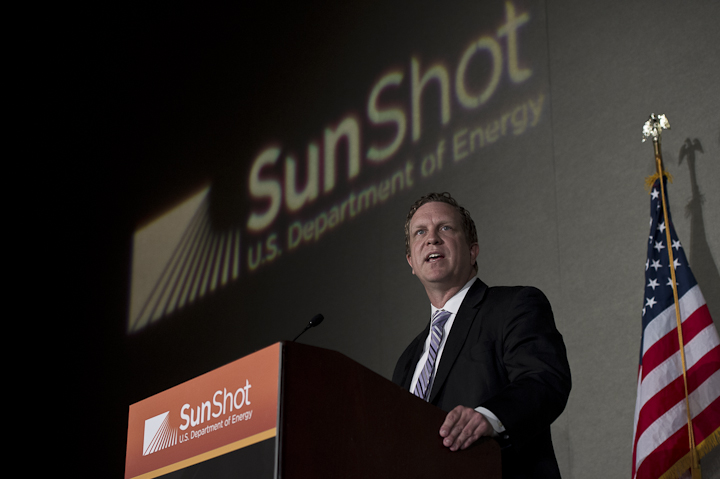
SunShot David Danielson

June 14, 2012- David Danielson, Asst. Secretary of Energy Efficiency and Renewable Energy, U.S. Dept. of Energy speaks at the plenary session at the SunShot Grand Challenge Summit and Technology Forum in Denver, Colorado.